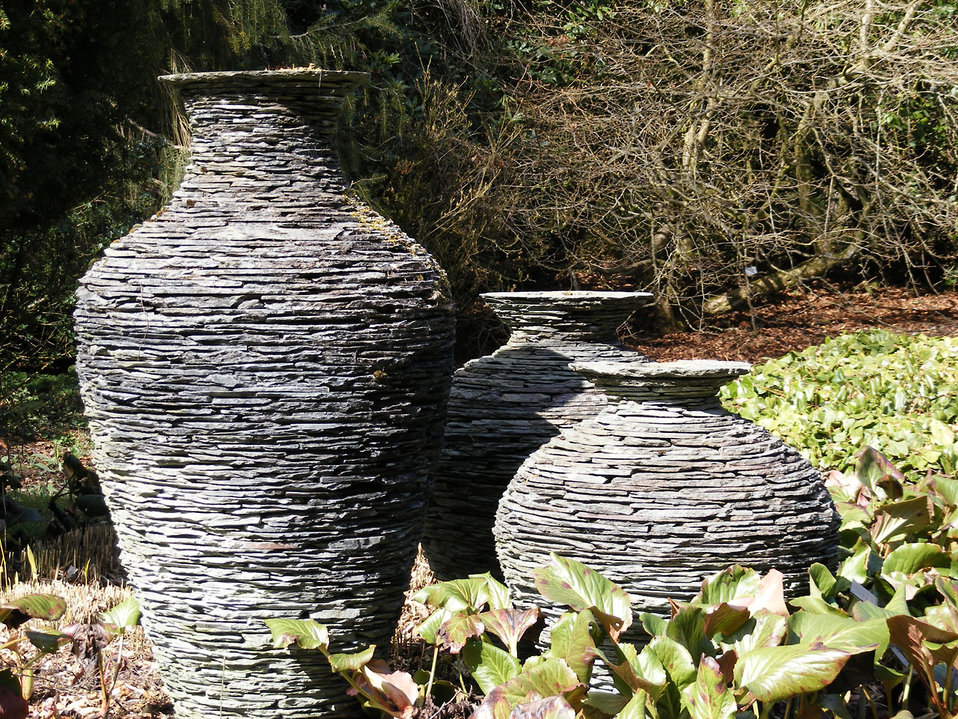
Slate urns

A trio of slate urns.